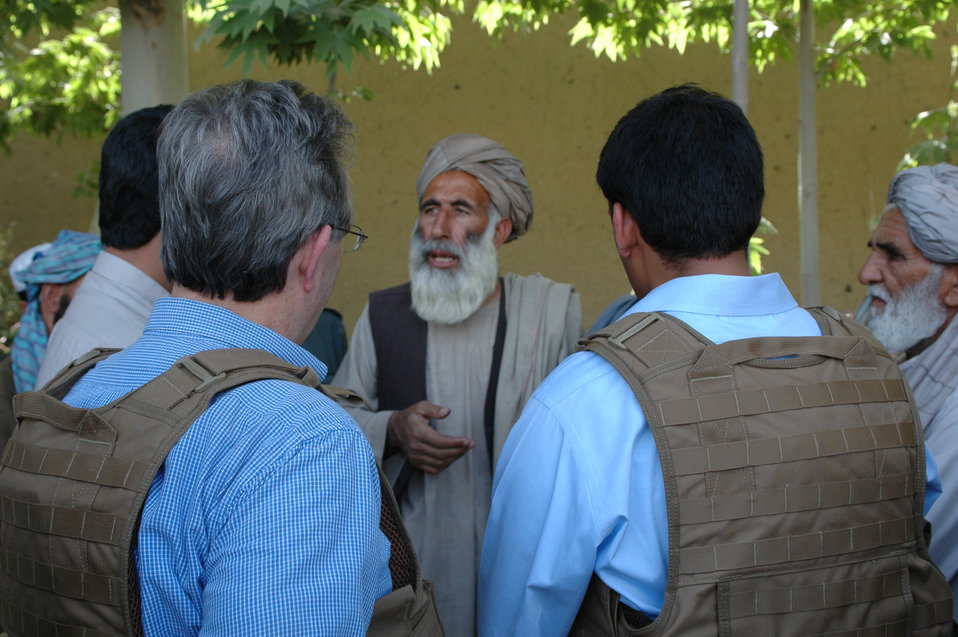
Dr Shah Visits Argandab April 10, 2010